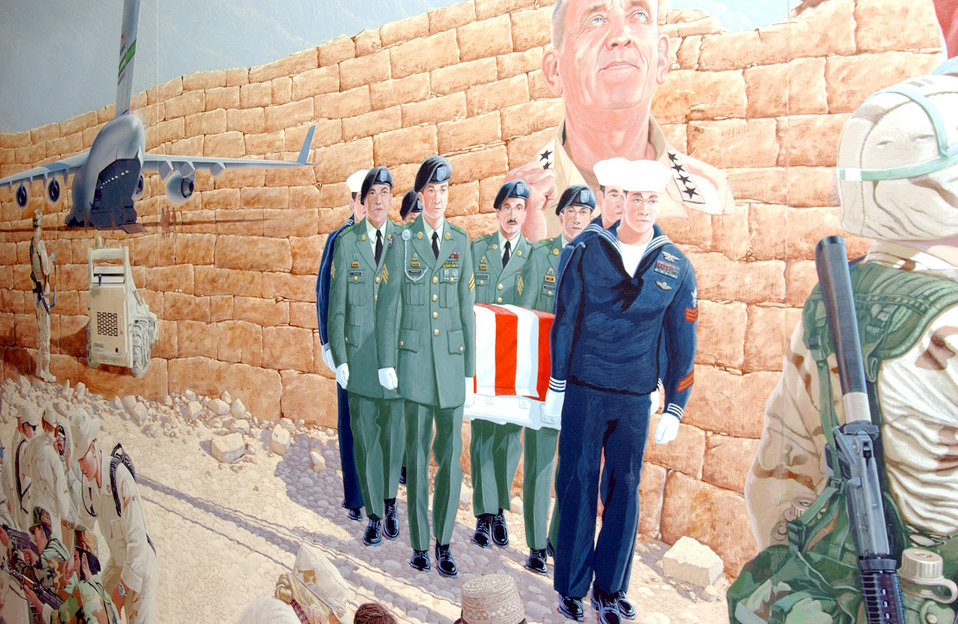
Enduring Freedom Mural

MACDILL AIR FORCE BASE, Fla. -- Artist Stewart Wavell-Smith was inspired to paint this 8-foot-tall by 28-foot-long mural to honor fallen servicemembers, portray the complex role of the U.S. military and to raise money through donations for the surviving spouses and children of fallen servicemembers. The Enduring Freedom Mural was unveiled at the U.S. Central Command headquarters here Jan. 30.